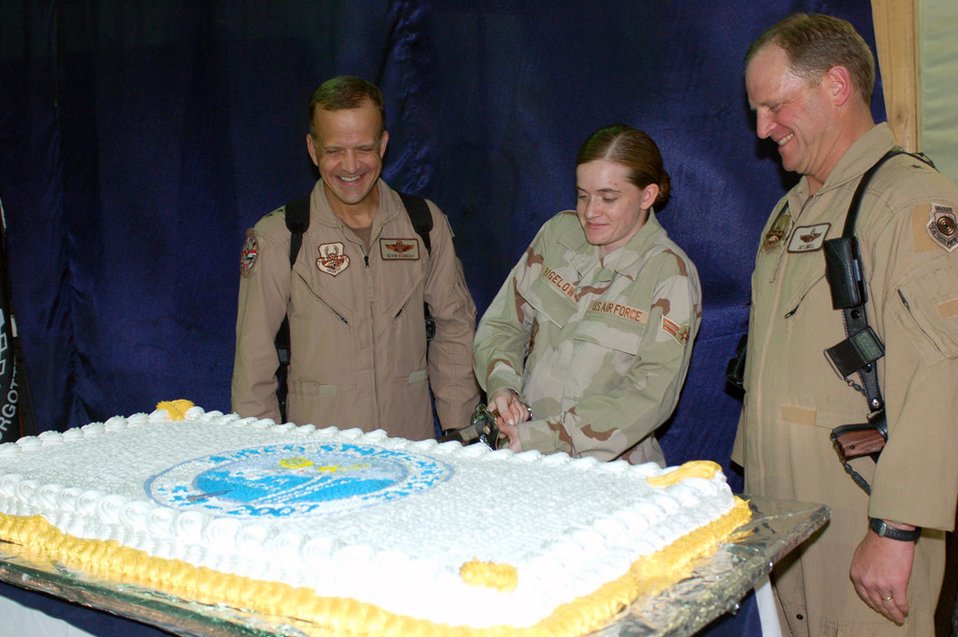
Airmen in Afghanistan pay tribute to Air Force anniversary

Maj. Gen. Kevin J. Kennedy, Airman 1st Class Kimberly Bigelow and Air Force Brig. Gen. Jay H. Lindell participate in a traditional cake-cutting ceremony during the service's 60th Anniversary celebration at Camp Eggers in Kabul, Afghanistan. General Kennedy is director of the Air Component Coordination Element for Central Command Air Force, General Lindell is commander of the Combined Air Power Transition Force for the Combined Security Transition Command-Afghanistan and Airman Bigelow is deployed from Davis-Monthan Air Force Base, Ariz., and is assigned to the CSTC-A's command group.